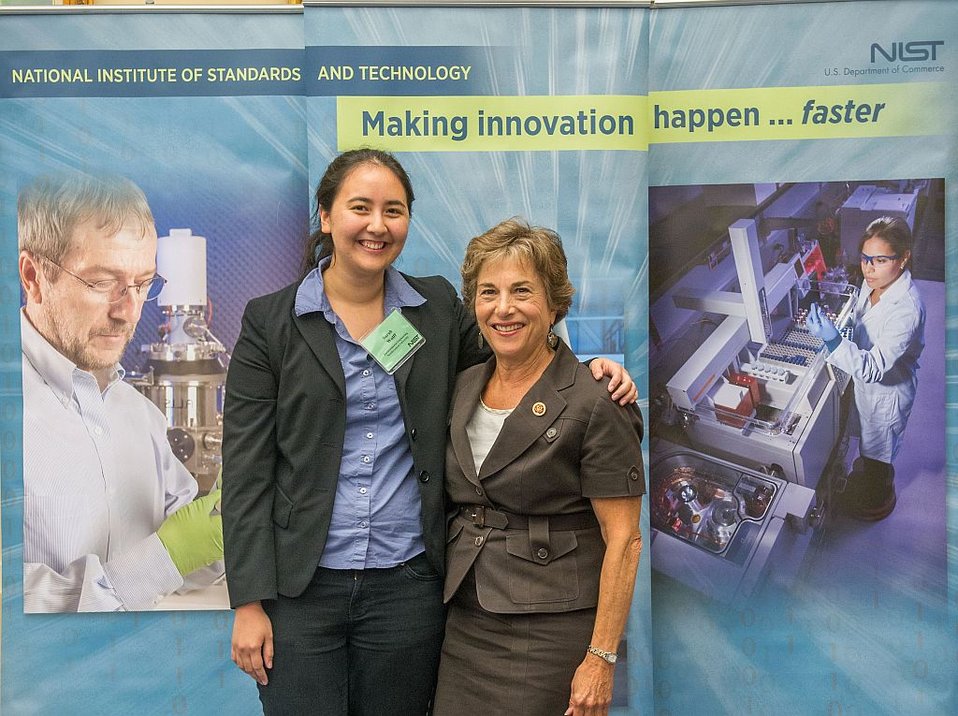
Congresswoman Schakowsky and SURF Student

Illinois Congresswoman Jan Schakowsky, Dem. (right) congratulates NIST Student Undergraduate Research (SURF) Fellow and Northwestern undergraduate Sarah Wolff (left) at the 2013 SURF on the Hill Day.